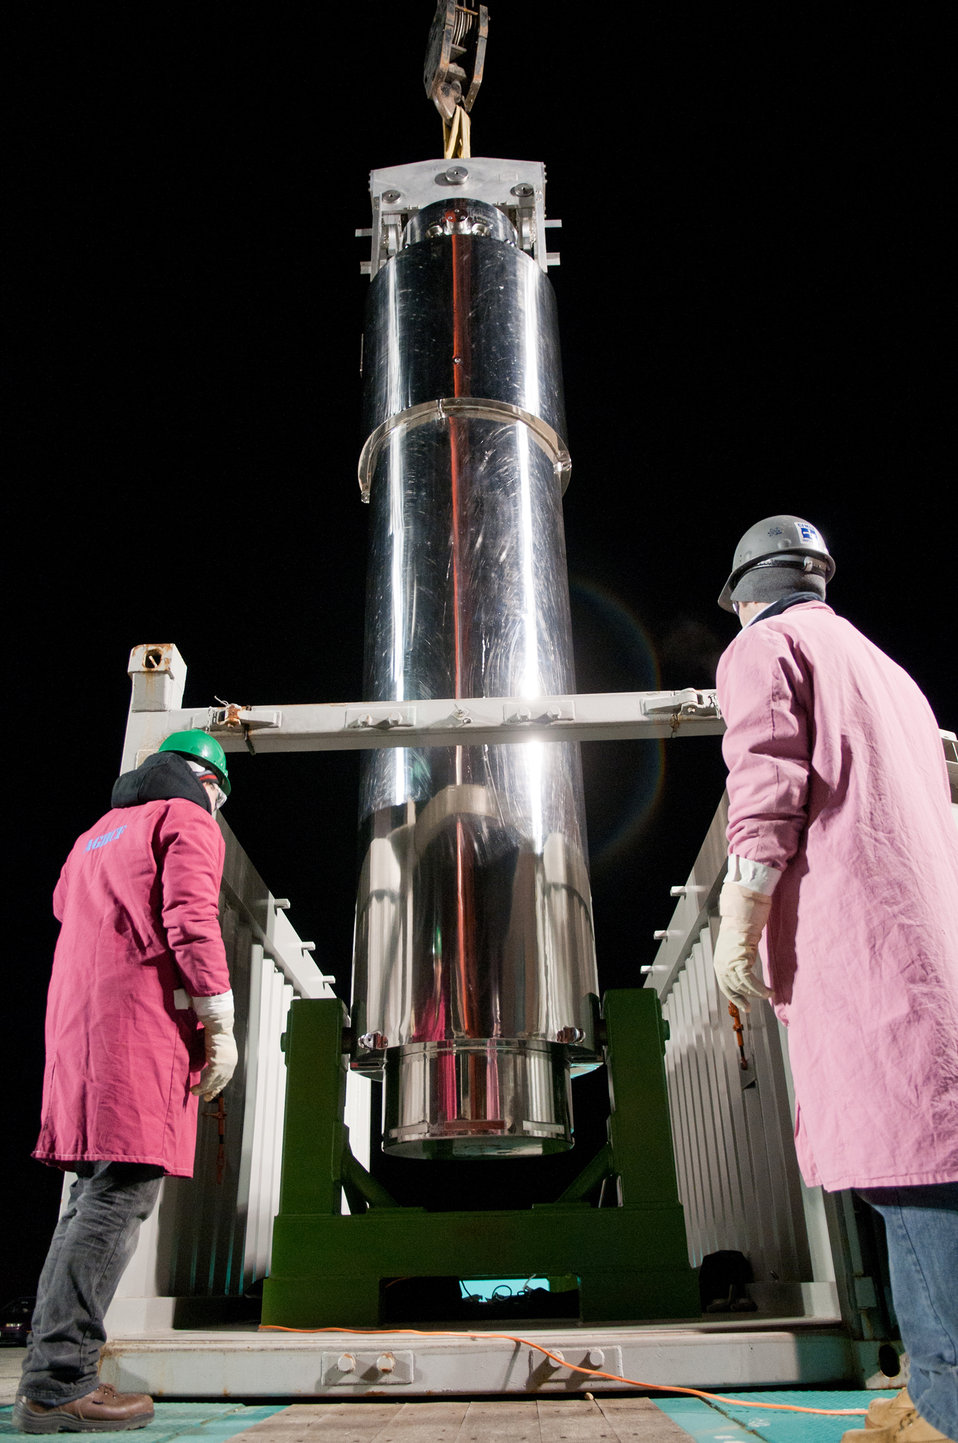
Argonne Forges Ahead in Waste Removal, Facility Demolitions with Recovery Act Help

A canister of irradiated sodium-bonded nuclear fuel specimens from Argonne’s Alpha Gamma Hot Cell Facility is lowered onto a shipping cask for shipment to Idaho National Laboratory.